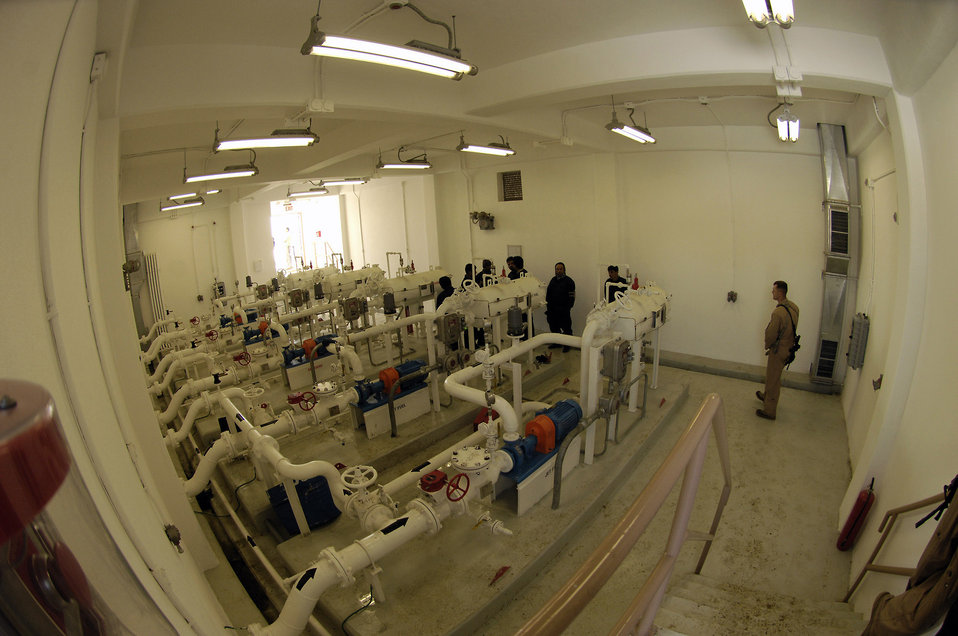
U.S., Afghan forces unite to open fuel depot

Staff Sgt. Jason King watches contractors perform an inspection on one of the class III fuels depot pump houses Feb. 17 at Khuja Rawash in Kabul, Afghanistan. Sergeant King is assigned to the 755th Air Expeditionary Group with the Logistics Embedded Training Team of Combined Security Transition Command-Afghanistan.